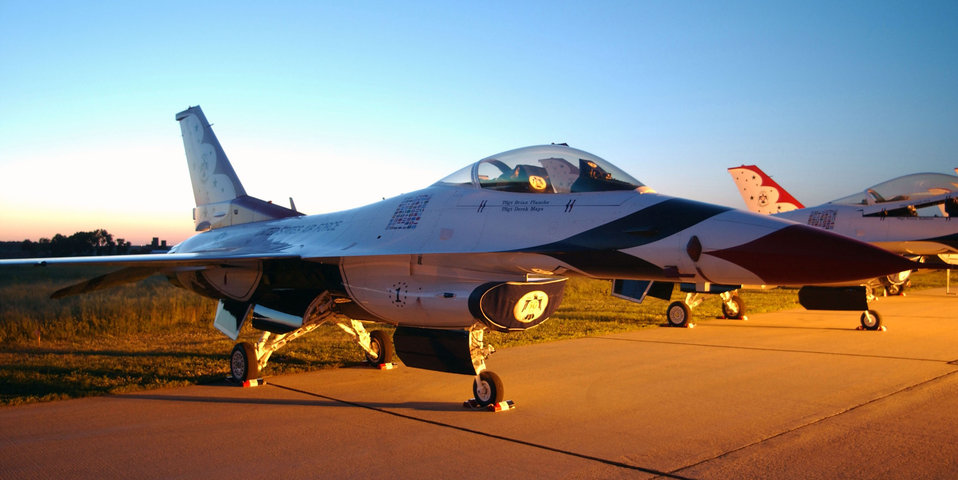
Thunderbird at rest

SIOUX FALLS S.D. -- An F-16 Fighting Falcon from the U.S. Air Force Thunderbirds sits on the tarmac at Joe Foss Field, S.D. The premier Air Force aerial demonstration team performed in an air show for 40,000 specatators the following day.